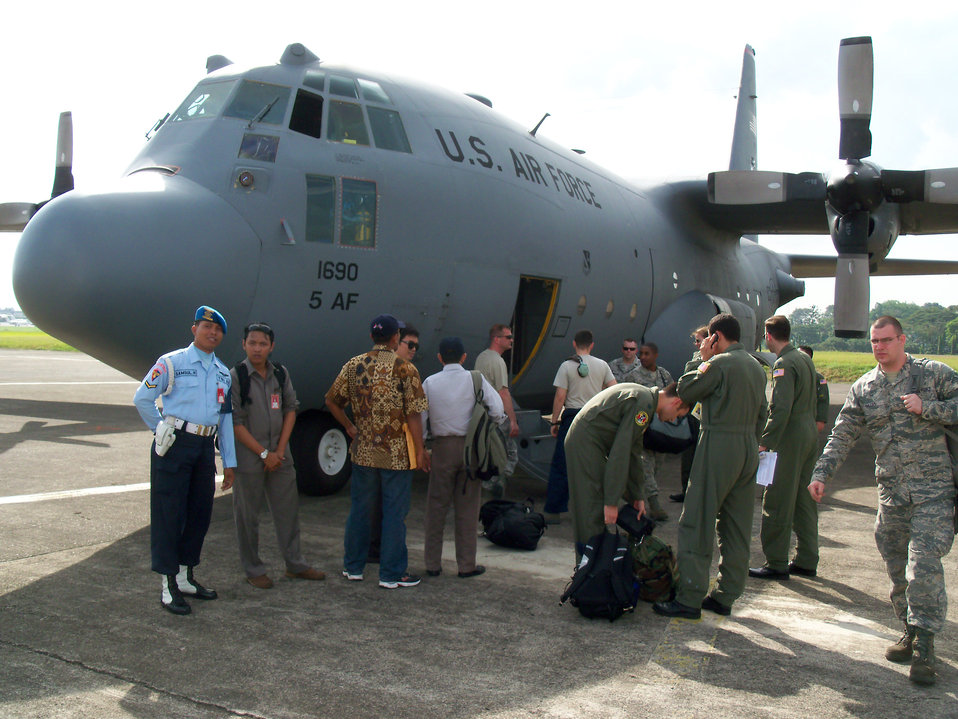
Exercise shows U.S. partnership with Indonesia

Airmen arrive to participate in Exercise Cope West 2010 April 17, 2010, at Halim Air Base, Indonesia.